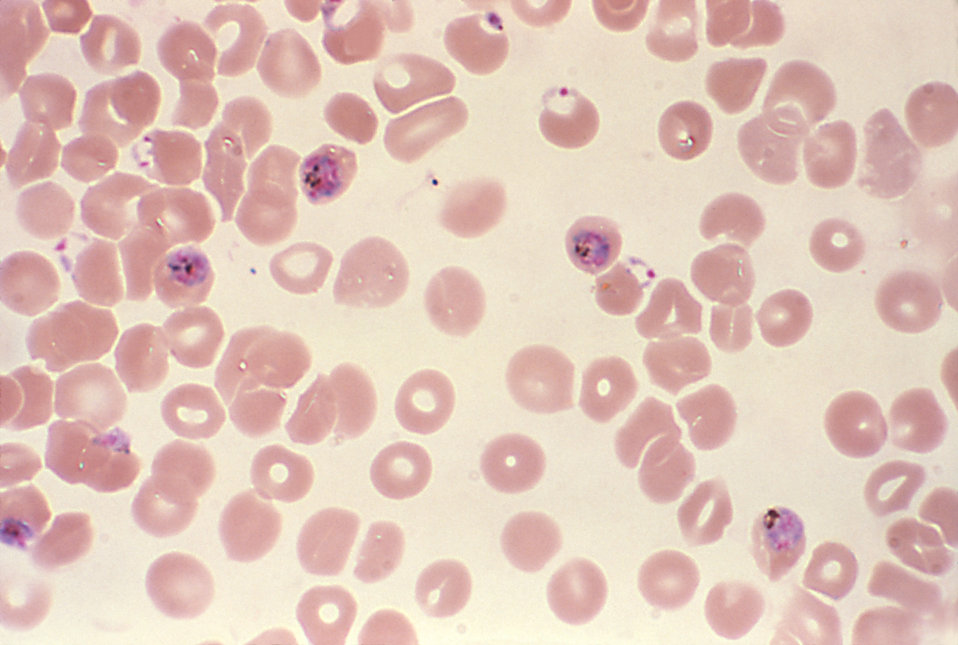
This thick film Aotus monkey blood smear reveals P. falciparum parasites after 24hrs of incubation using a Giemsa stain.